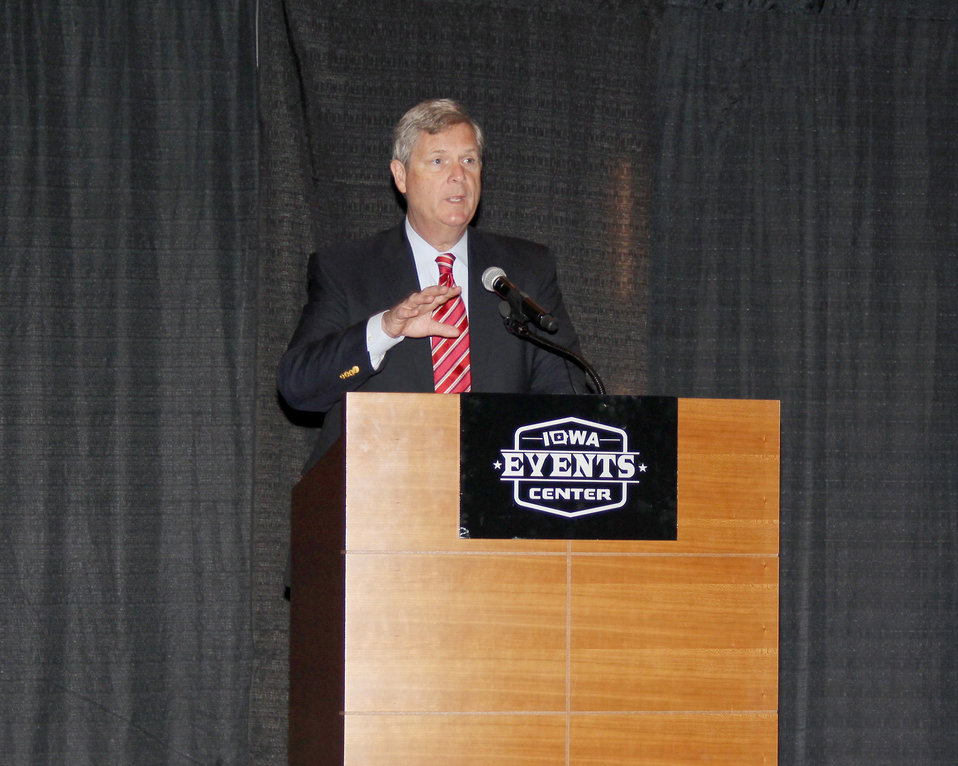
Agriculture Secretary Tom Vilsack speaks at the rally for Iowa’s Outdoor Legacy event in Des Moines, IA on Saturday, Sept. 29, 2012. The event included several speakers and panelists who highlighted challenges and opportunities for conservation in Iowa, as well as lessons learned around the country and world. Secretary Vilsack’s comments focused on the important role conservation plays in helping build a stronger rural America through better care for the environment and improved economic opportunities.